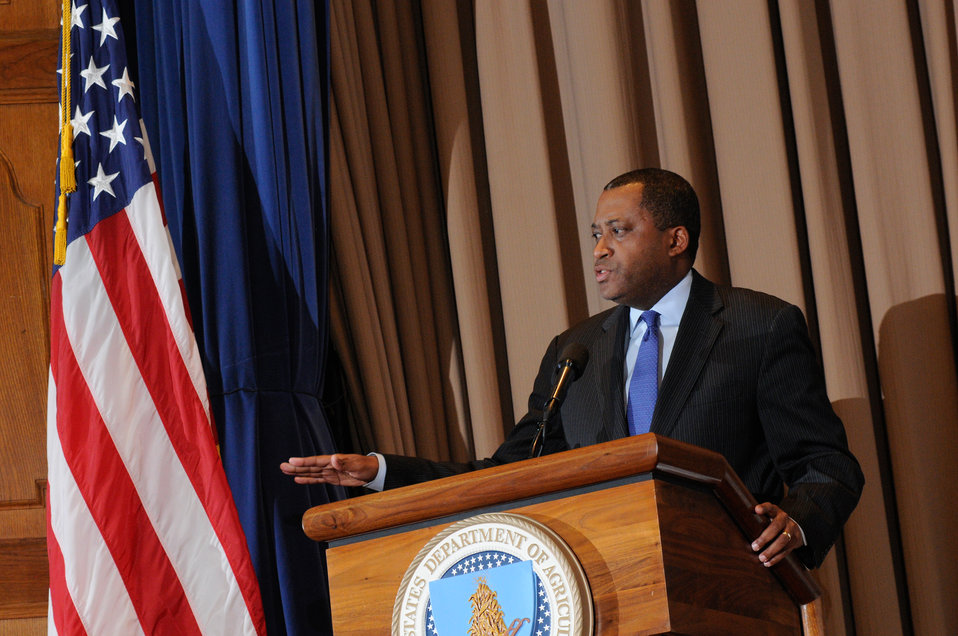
Agriculture Assistant Secretary Civil Rights Dr. Joe Leonard speaks at the U.S. Department of Agriculture (USDA) Dr. Martin Luther King, Jr. National Service Day presentation of the Drum Major for Service Awards at the USDA Jefferson Auditorium, in Washington, D.C., on Tuesday, Jan. 15, 2013.